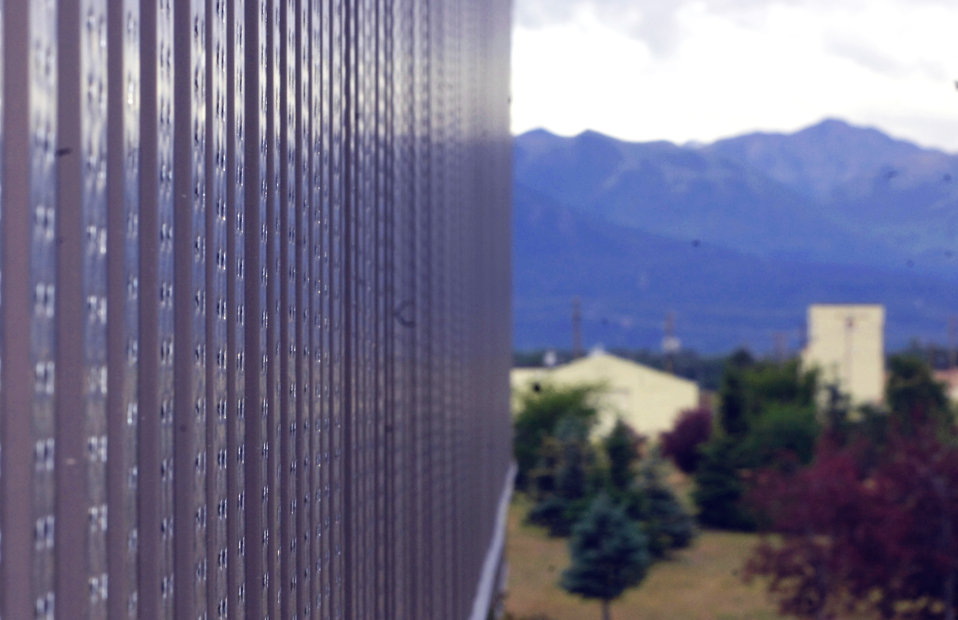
Solar wall saves Air Force money

A solar wall collects rays at Elmendorf Air Force Base, Alaska. Two of these walls hang on the outside of the 3rd Logistics Readiness Squadron, and have saved base officials $15,000 in energy costs since November 2008 when they were built.